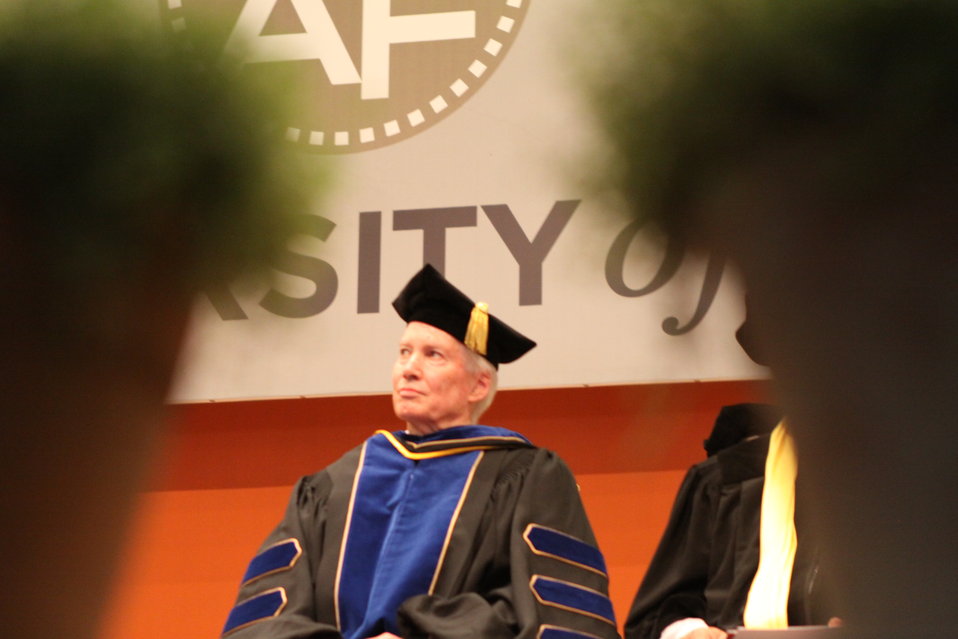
100526 AUAF Graduation 163